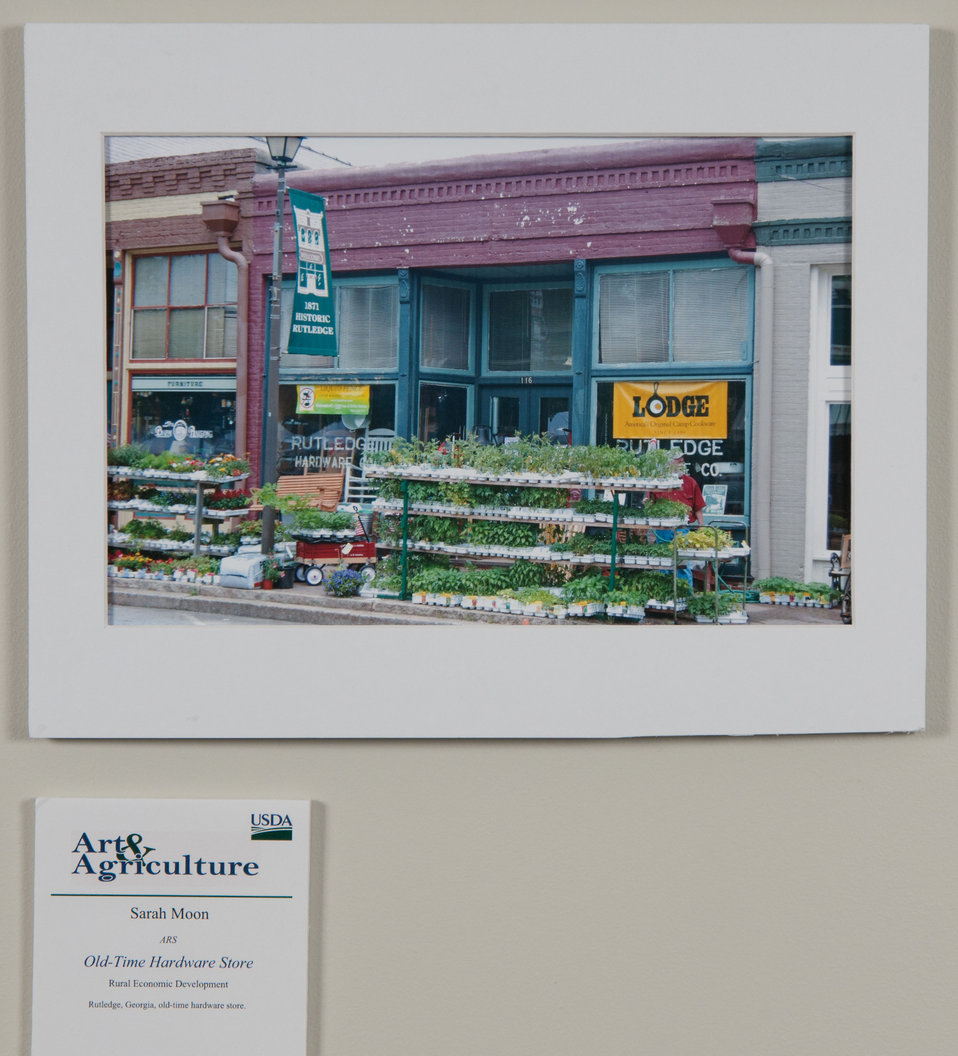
Online Viewer's Choice entries of the 2013 Art & Agriculture, Tuesday, July 9, 2013, in the South Building, Washington, D.C. Themes were expressed by employees from across the department and the contest was open to full-time and part-time USDA employees. Winning artwork will be displayed till the end of the year. U.S. Artistic expression is a creative outlet that is vital for an individual to grow and develop.